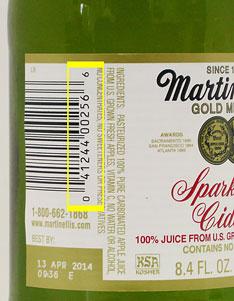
RECALLED – Sparkling Cider

December 30, 2011 – Product Recall – Voluntary Recall of Limited Quantity of 6-pack 250 mL Martinelli’s Gold Medal Sparkling Cider.